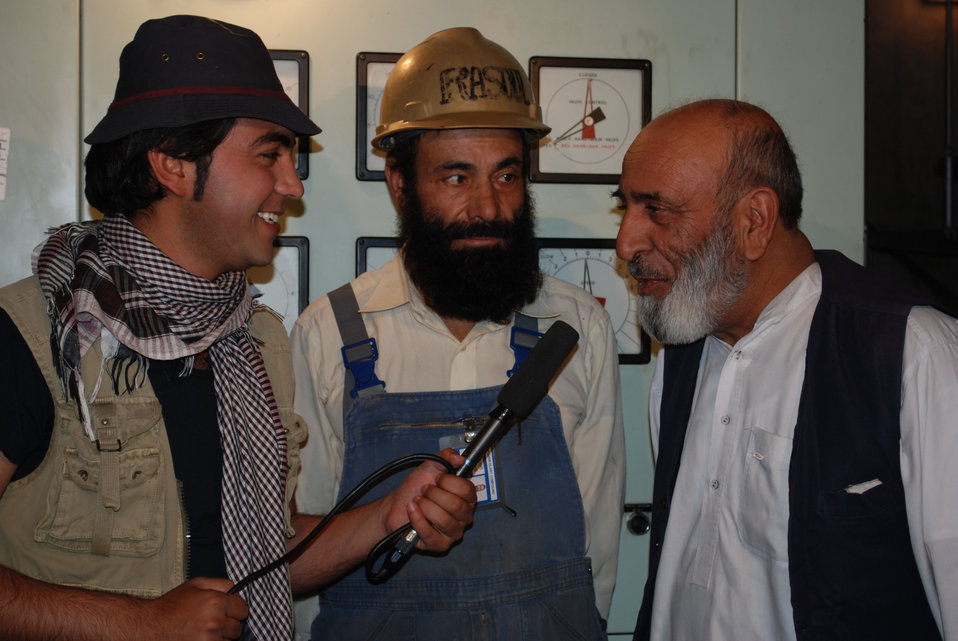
'On the Road' in Kandahar